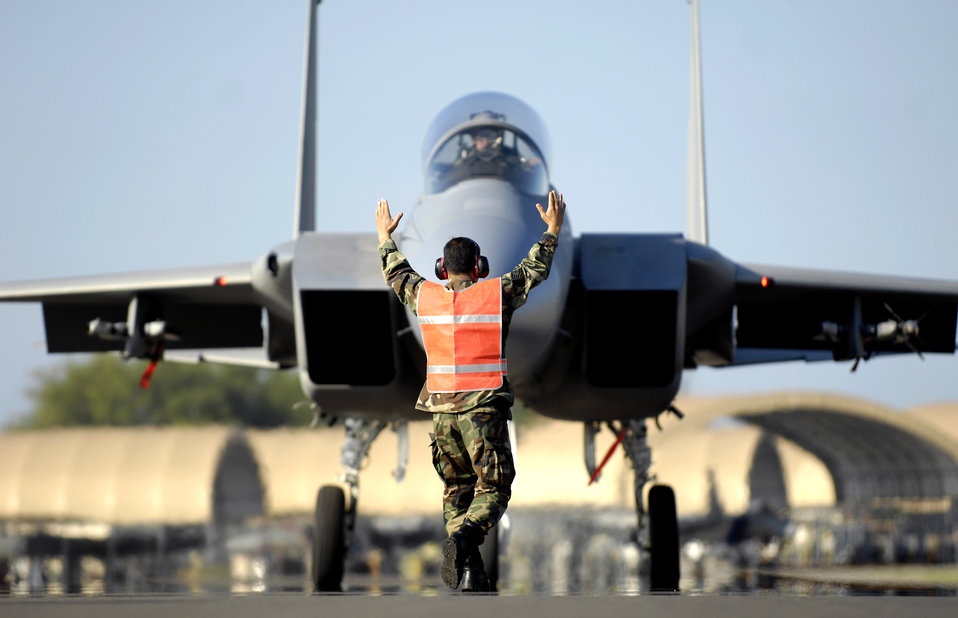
Eagles soar again

A weapons loader marshals an F-15 Eagle into position Jan. 9 at Hickam Air Force Base, Hawaii. The F-15s, from the 199th Fighter Squadron of the Hawaii Air National Guard, have not flown since Air Force officials grounded the F-15 fleet Nov. 3, 2007. Air Combat Command officials cleared a portion of its F-15 A through D models to begin flying Jan. 9.